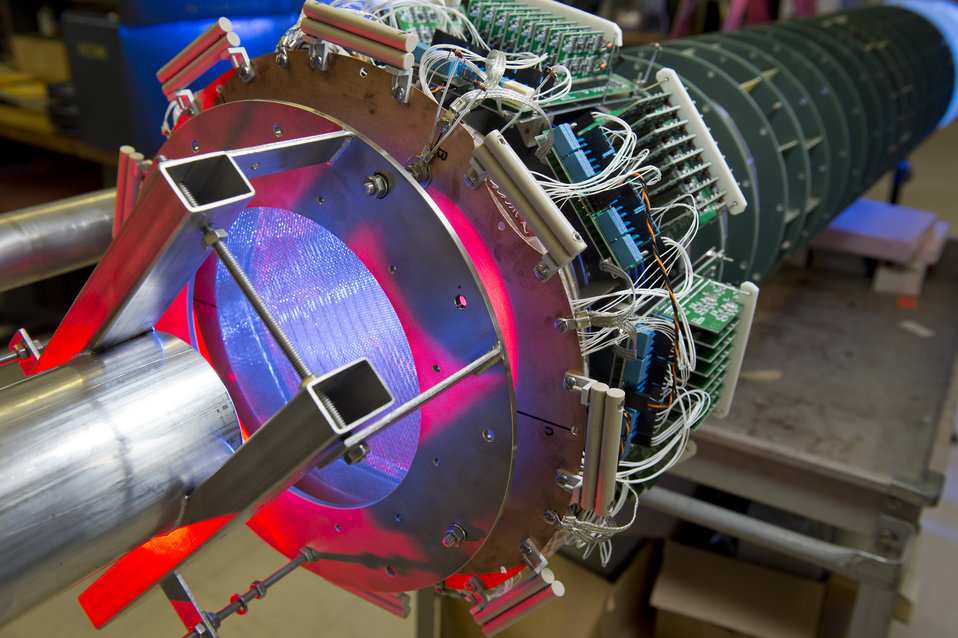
Long-bo (TPC) Time Project Chamber for Liquid Argon Detector.